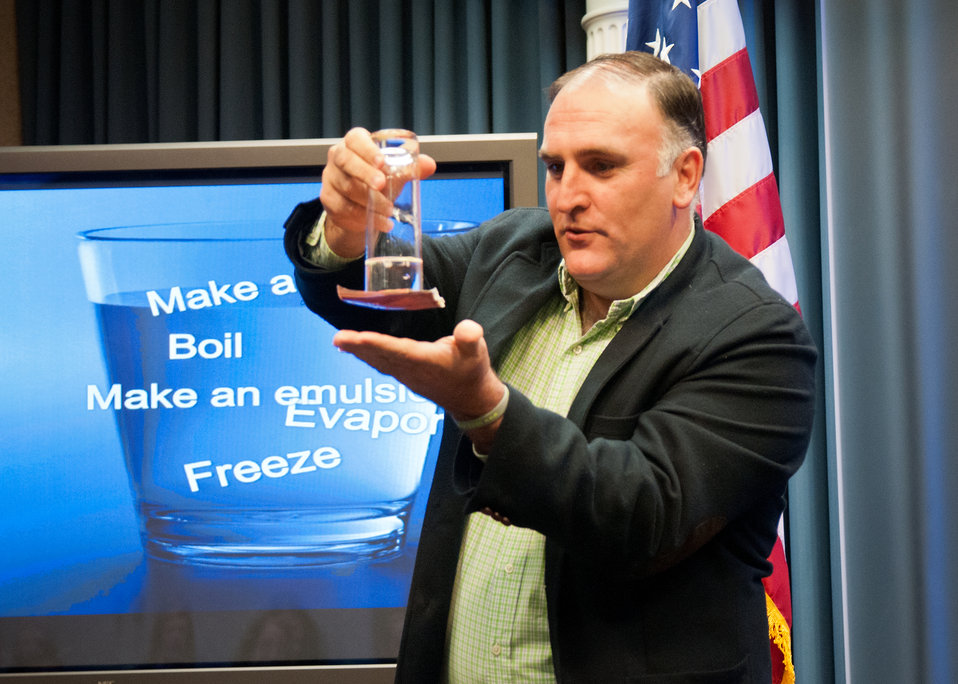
Chef Jose Andres, Chef/Owner, Think Food Group the guest speaker at the kick-off meeting of the United States Department of Agriculture White House Liaison Weekly Political Appointee Meeting for the New Year in Washington, DC, Thursday, January 20, 2012. Chef Andres discussed creativity and how it can contribute to food policy.